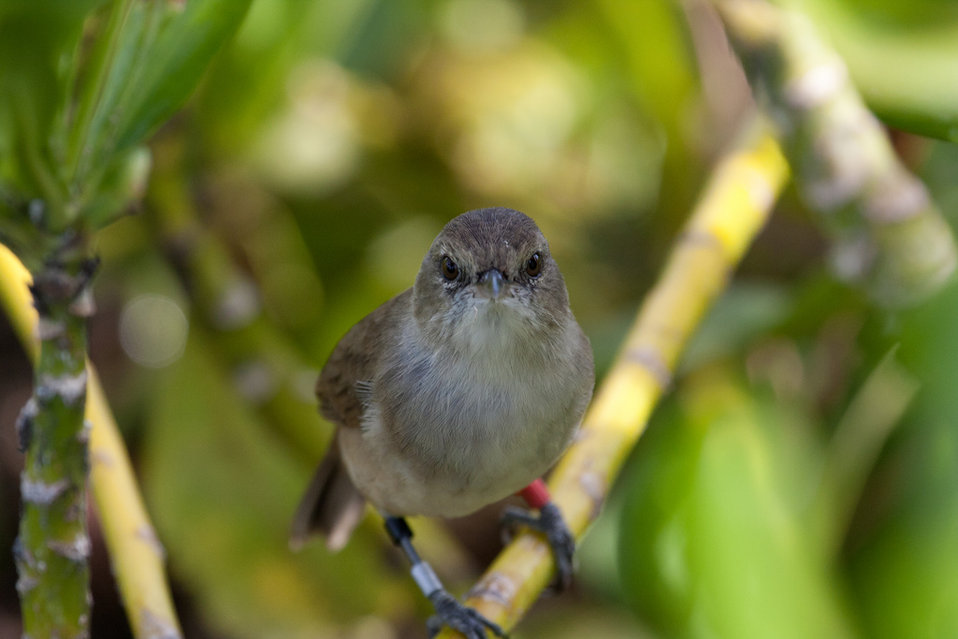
millerbird on its new home turf

Laysan Island
Sept. 11, 2011